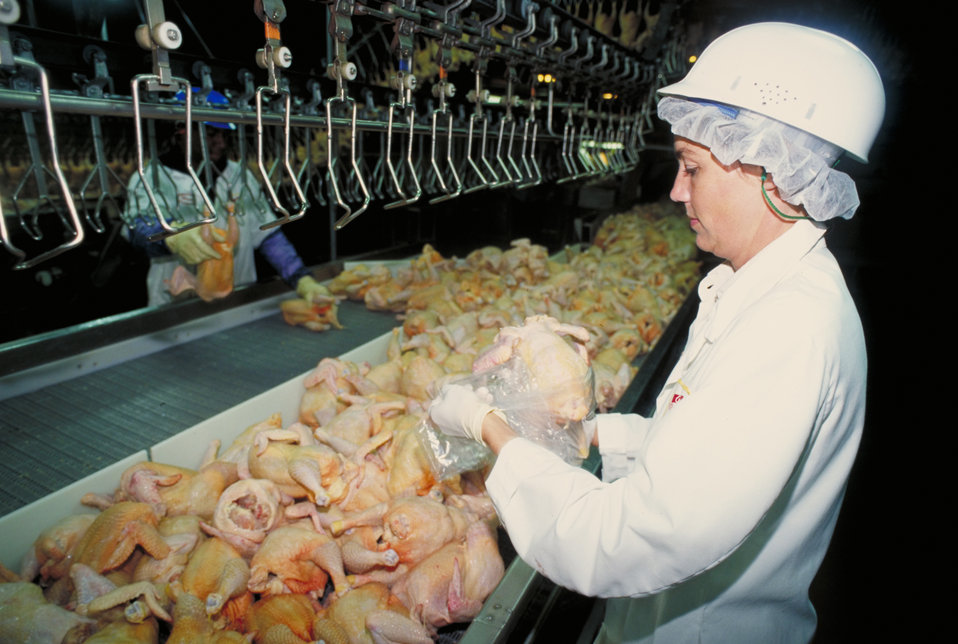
U.S. Department of Agriculture (USDA) Food Safety Inspection Service (FSIS) inspector collects beef carcass samples for microbiological testing to verify the adequacy of the Hazard Analysis and Critical Control Points (HACCP) issued by FSIS on May 13, 1996. USDA photo Bob Nichols.